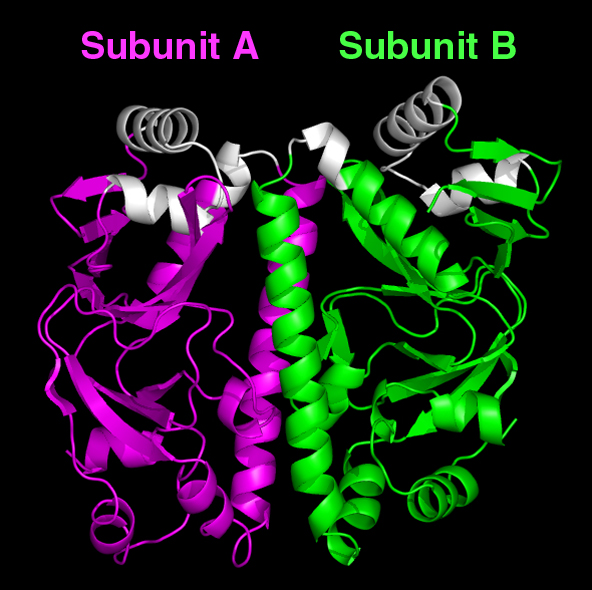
Tuberculosis

Computer model of the defined structure for the cyclic AMP receptor protein (CRP) found in Mycobacterium tuberculosis. The two subunits of the protein (colored purple on the left and green on the right) are genetically identical but, surprisingly were found to be asymmetric (different in shape) for the areas shown in white (top). This is the 'off' state of the CRP that is unable to activate genes necessary for the microbe's survival.